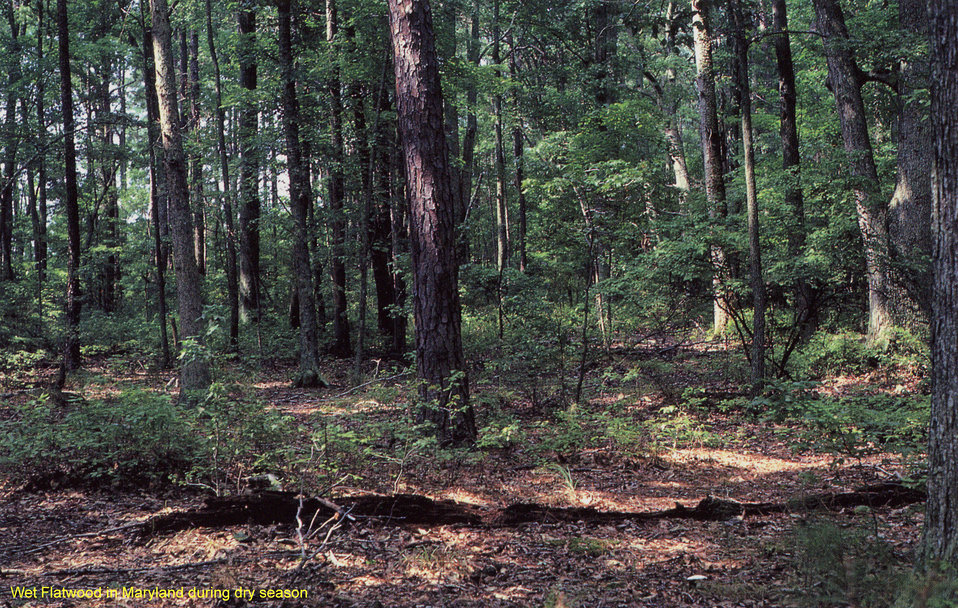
Wet Flatwood in Maryland during dry season